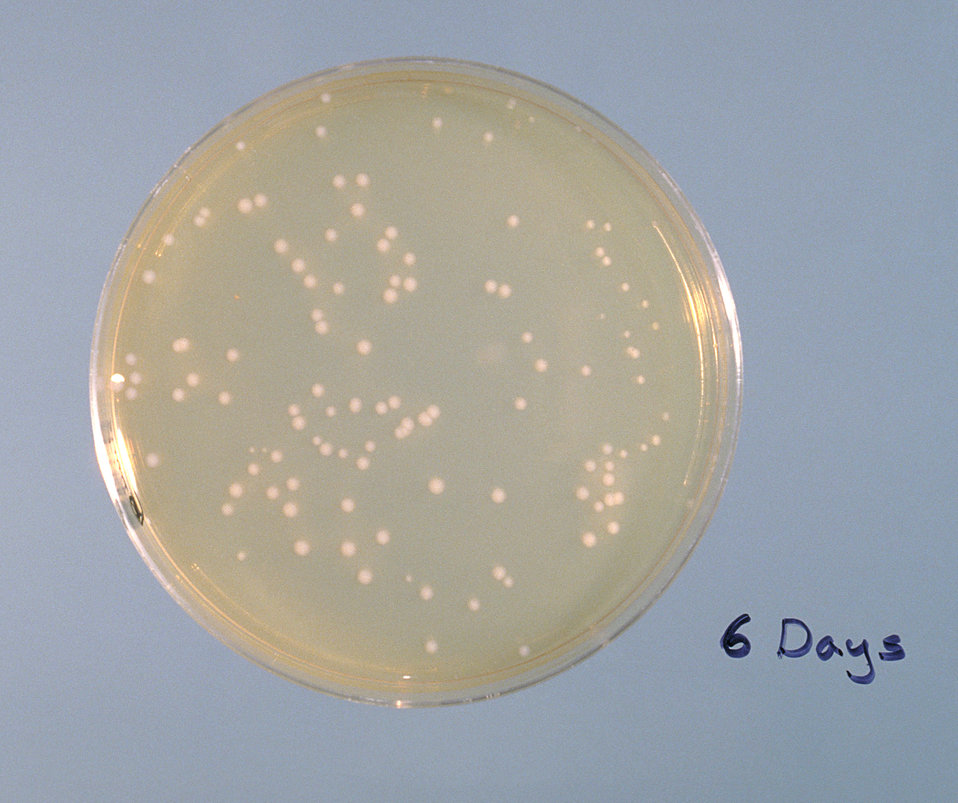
Feeley-Gorman agar plate culture of Legionella Pneumophilia.